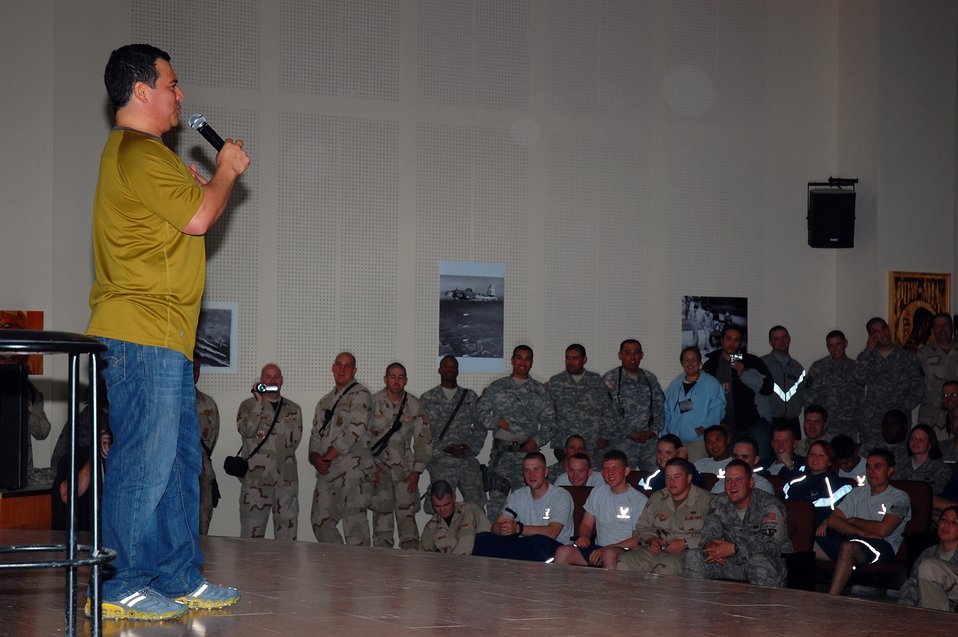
'Mind of Mencia' entertains troops in Middle East

Comedian Carlos Mencia entertains members of the 386th Air Expeditionary Wing Nov. 28 in Southwest Asia. Mr. Mencia and his crew traveled throughout the Middle East providing entertainment for deployed servicemembers.